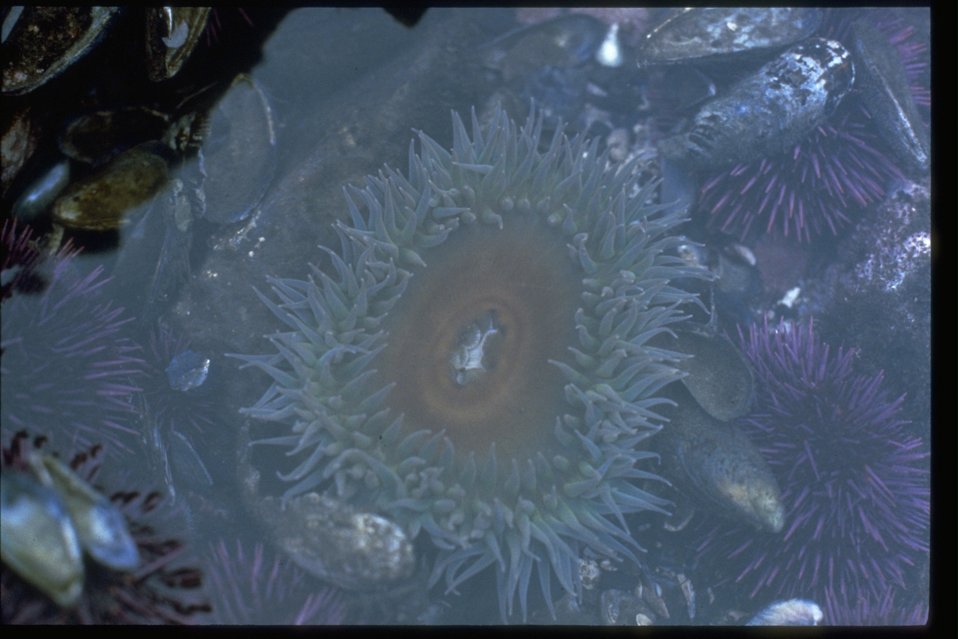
Giant Green Sea Amenone and Purple Sea Urchine.